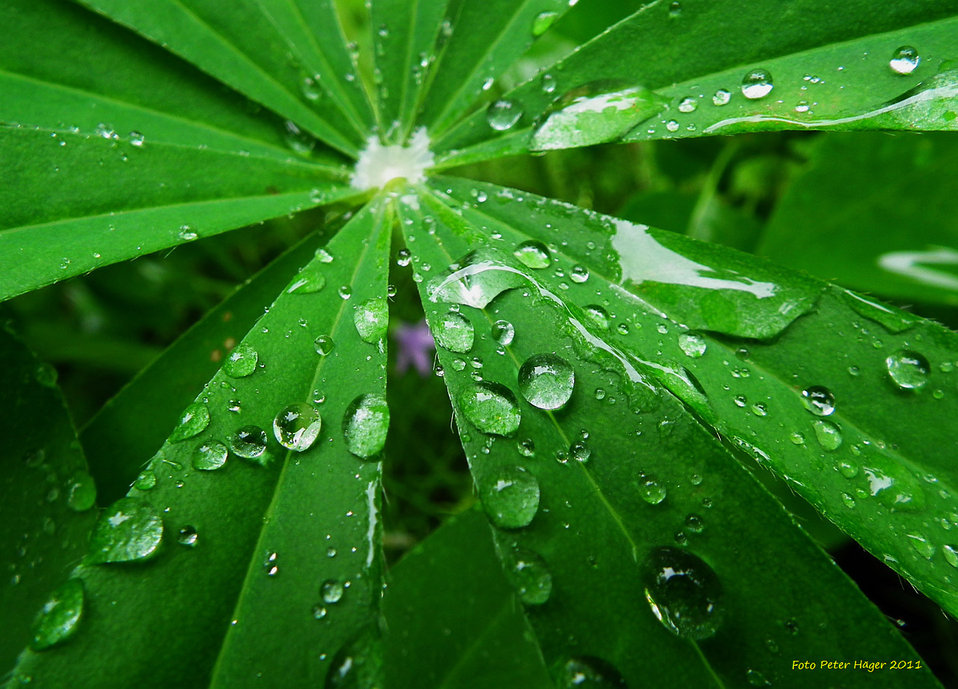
Lupine leaf

Lupine leaves with raindrops.